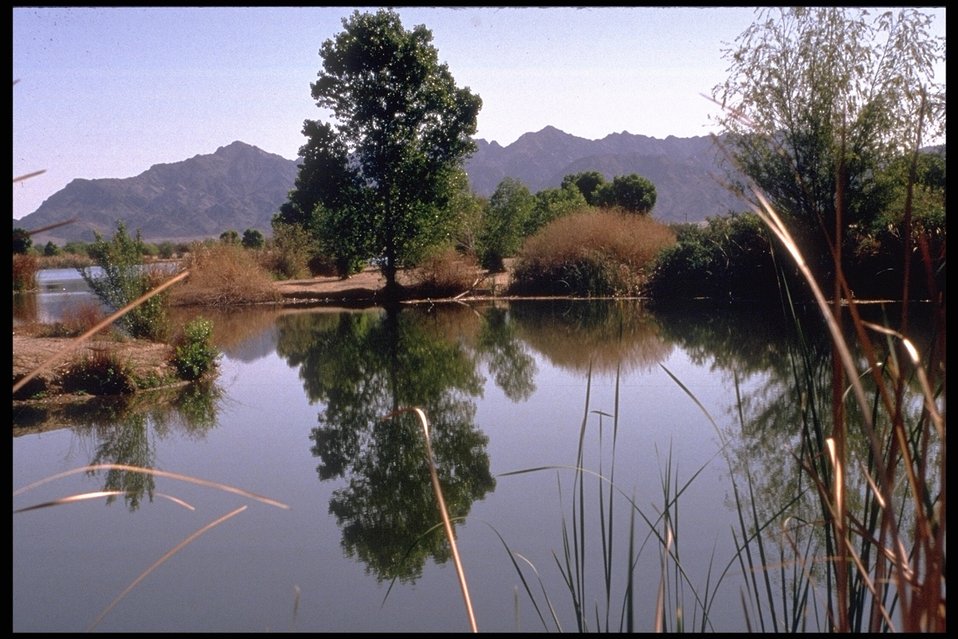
Another example of the diverse scenic landscape of Arizona's public lands.